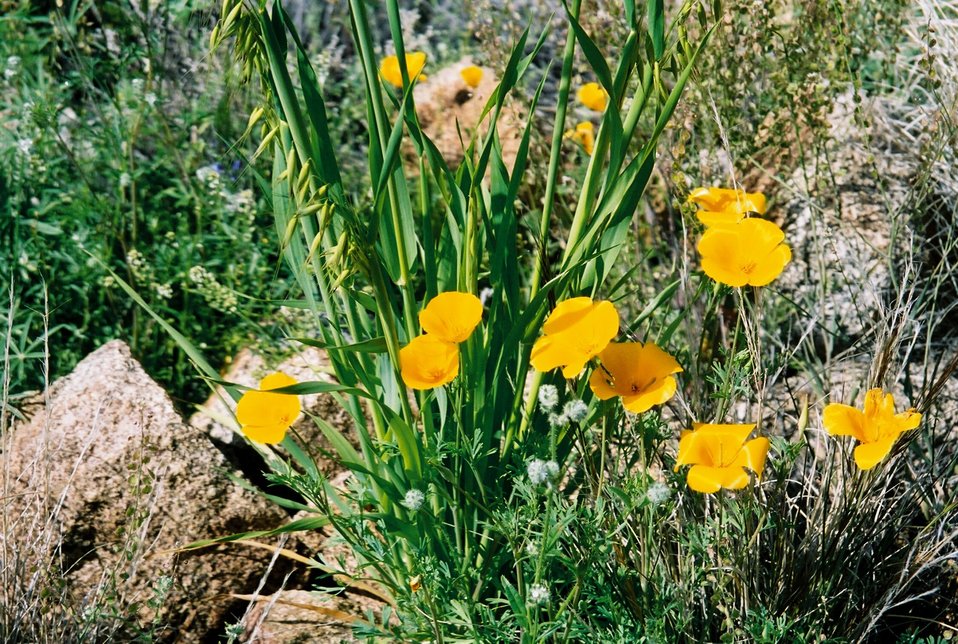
Many different kinds of beautiful wildflowers grow in the Agua Fria National Monument.